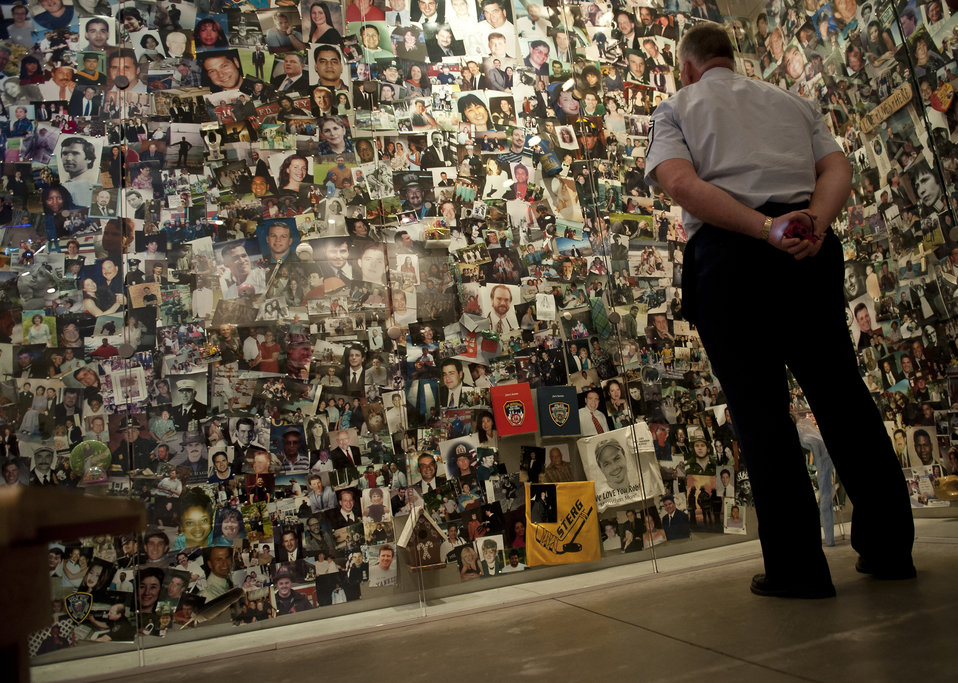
2012 Air Force Week NYC

Senior Master Sergeant Wayne Hanna looks at the photos of the missing and dead men, women and children from the terrorist attacks at the World Trade Center Building on September 11, 2001, at the 9/11 Museum on August 20, 2012 in New York City. Hanna is from 76th Air Refueling Squadron at Joint Base McGuire-Dix-Lakehurst, N.J.